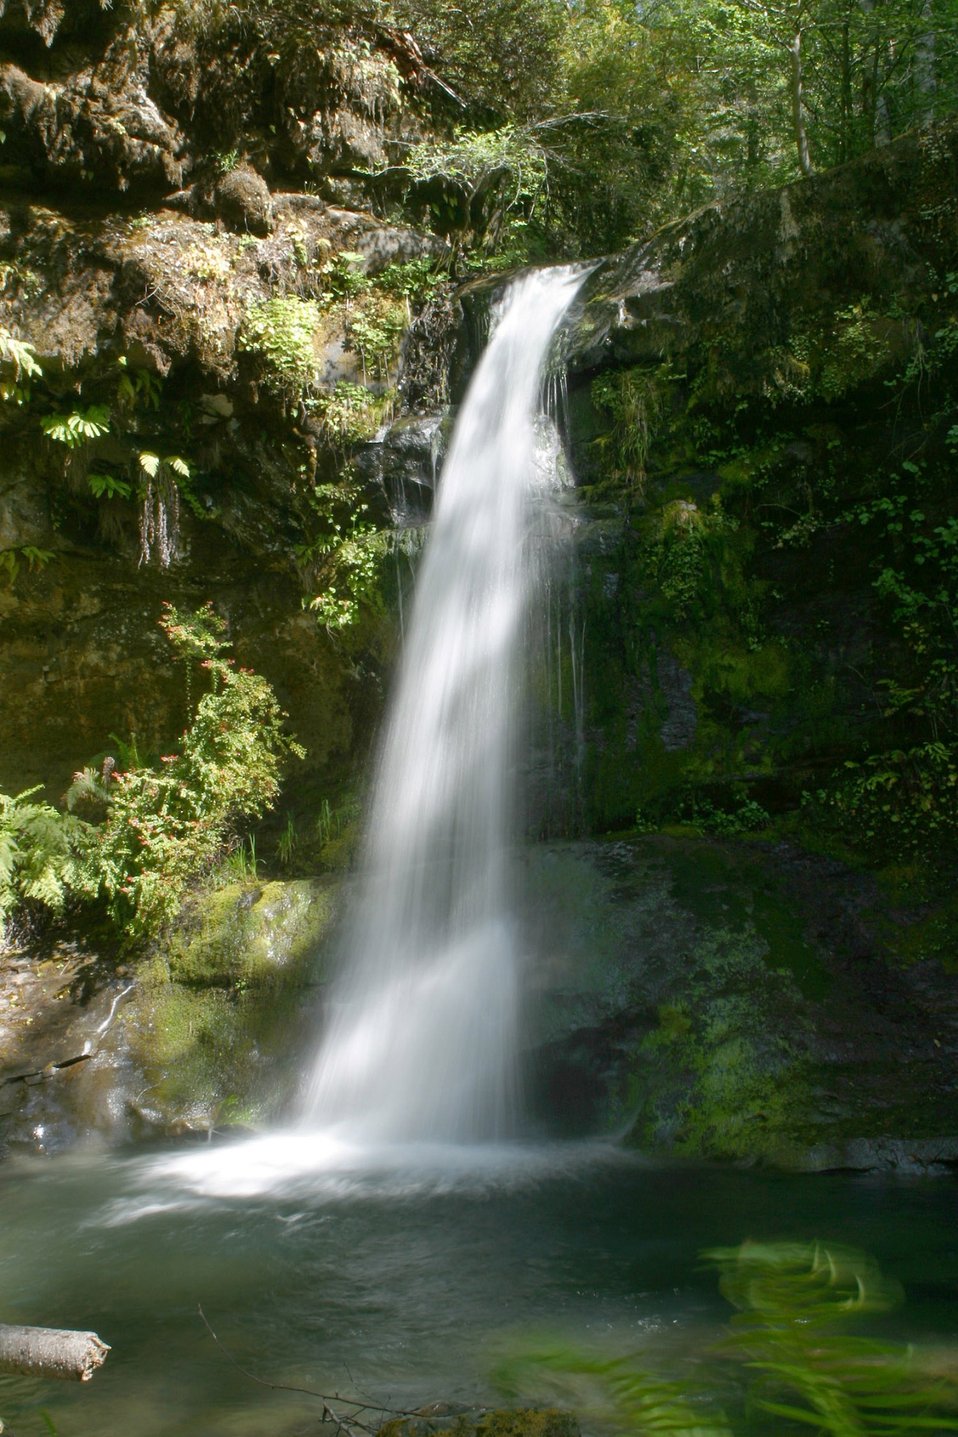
Wild section of the Rogue River from Grave Creek to Foster Bar May 19 to May 22.